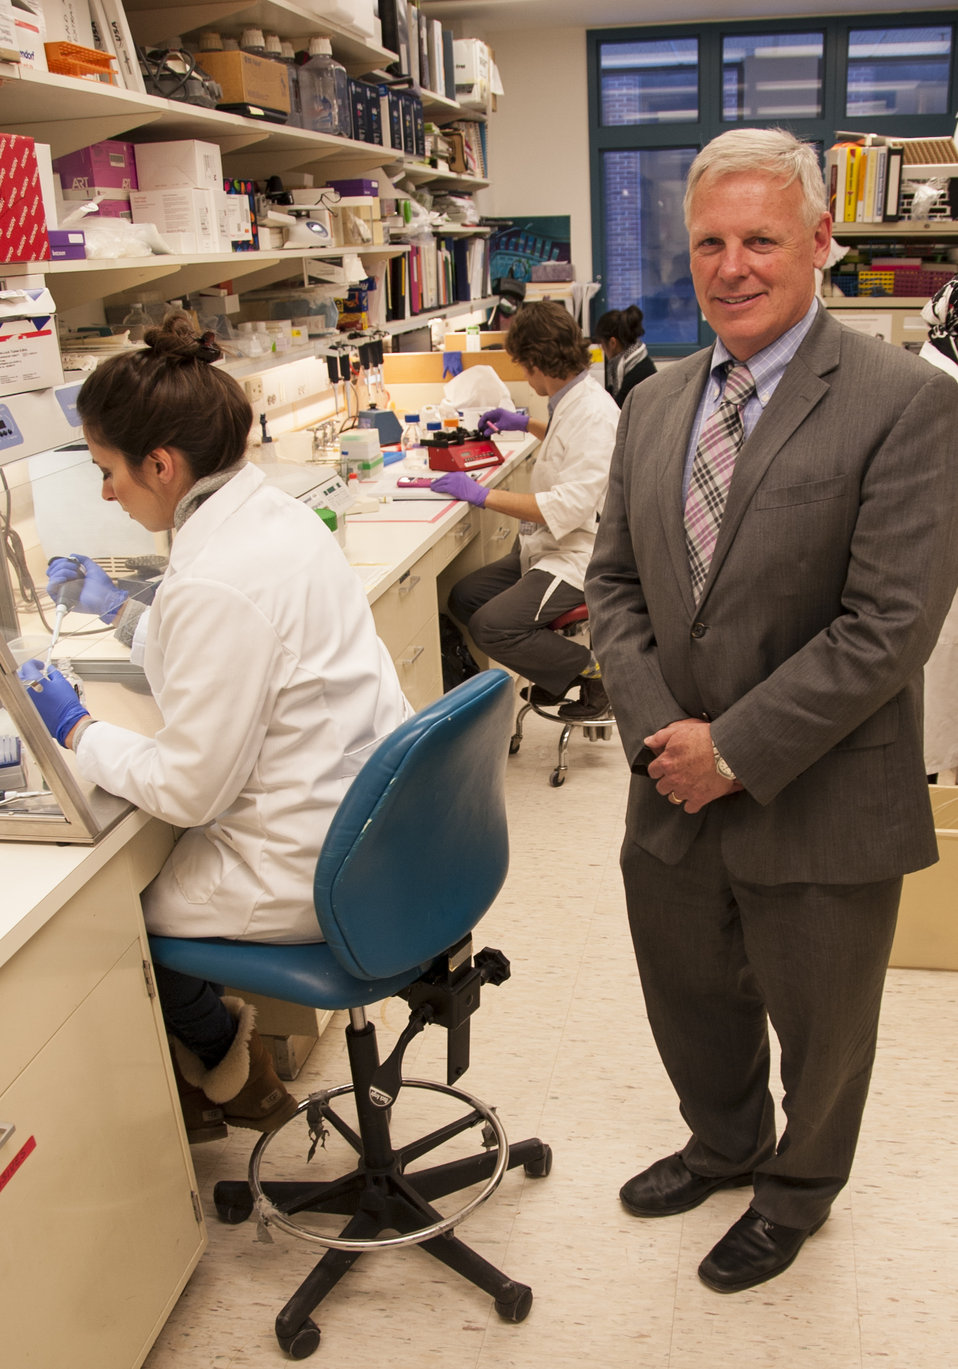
Stem Cell Research (0504)

Steven Bauer, Ph.D., chief of the Cellular and Tissue Therapy Branch in FDA’s Office of Cellular Tissue and Gene Therapies (standing), visits his team of scientists in an FDA laboratory on the National Institutes of Health campus in Bethesda, Md.

To learn more about stem cell research, read this FDA Consumer Update:

Adult Stem Cell Research Shows Promise

This photo is free of all copyright restrictions and available for use and redistribution without permission. Credit to the U.S. Food and Drug Administration is appreciated but not required.

Privacy and use information: www.flickr.com/people/fdaphotos/